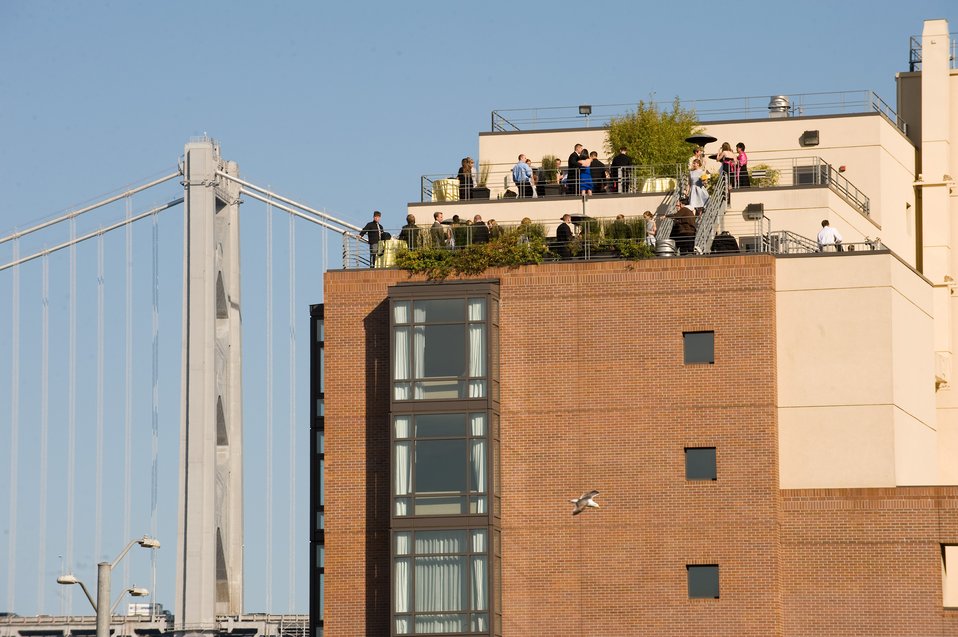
San Francisco Dream Wedding

A wedding reception followed the marriage of Vanessa Muza Teskey and Capt. Mike Hawkins on the rooftop of the Hotel Vitale on San Francisco's waterfront May 14, 2010. The couple won the San Francisco Dream Wedding Giveaway with internet viewer votes. Mrs. Hawkins has been diagnosed with stage IV Hodgkin's lymphoma. Vendors donated $100,000 of goods and services to the couple's wedding day.